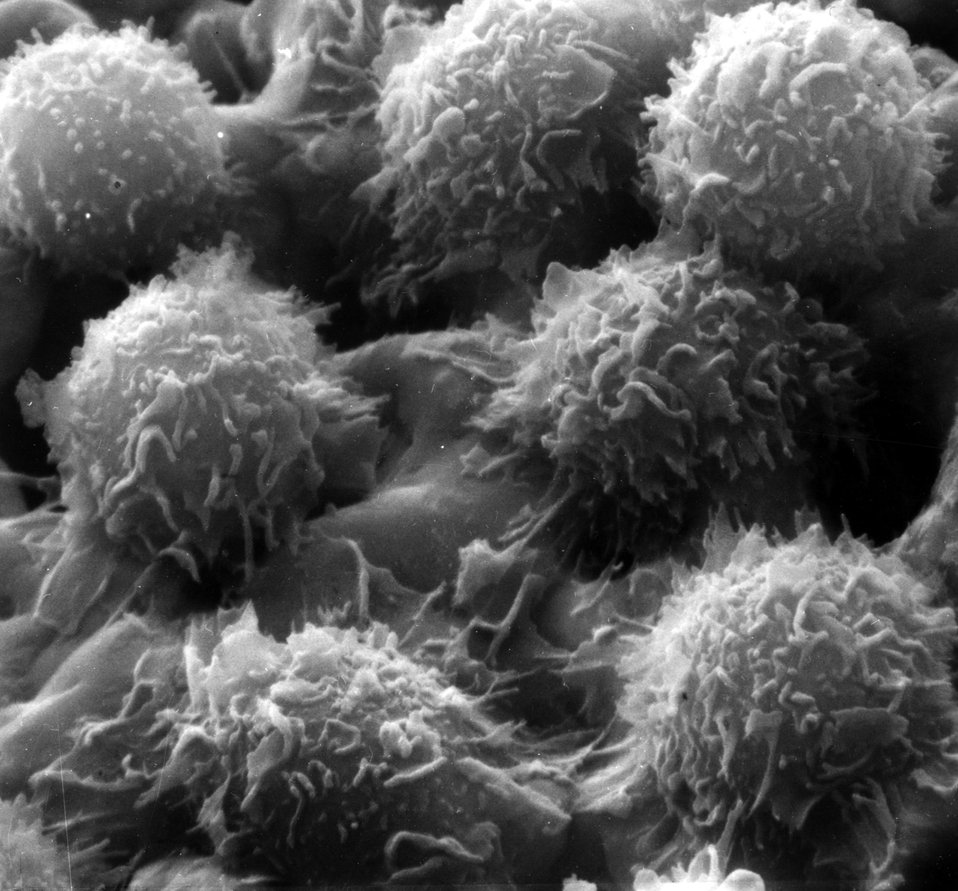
Cells from a typical case of 'hairy' cell leukemia showing the structural figures described in Fig. 1.